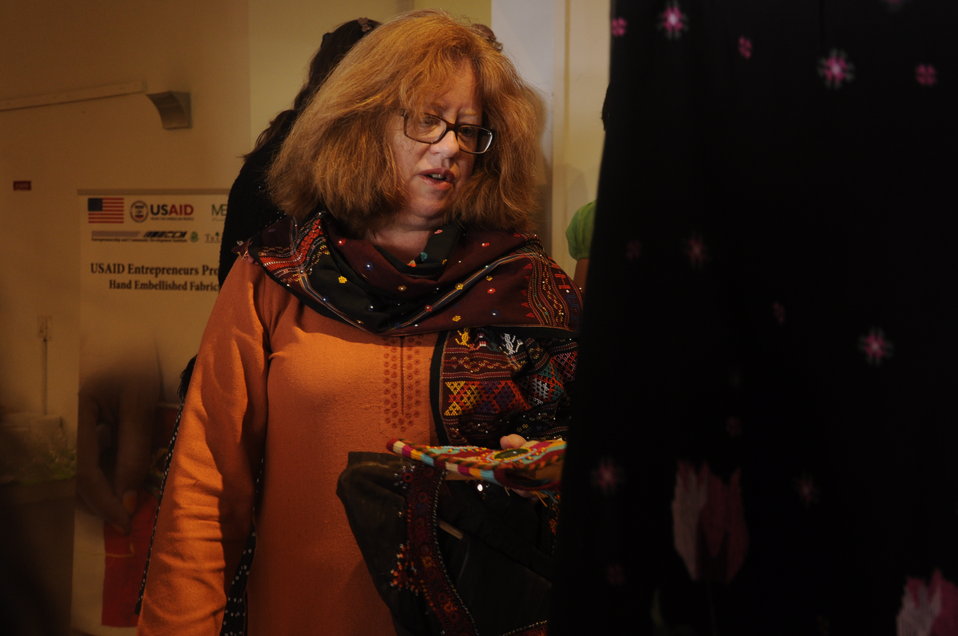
Ms.Cathrine Moore, Deputy Mission Director USAID Pakistan, showing interest in the Products displayed at the Stitching and Chai Exhibition organized by the USAID's Entrepreneurs Project